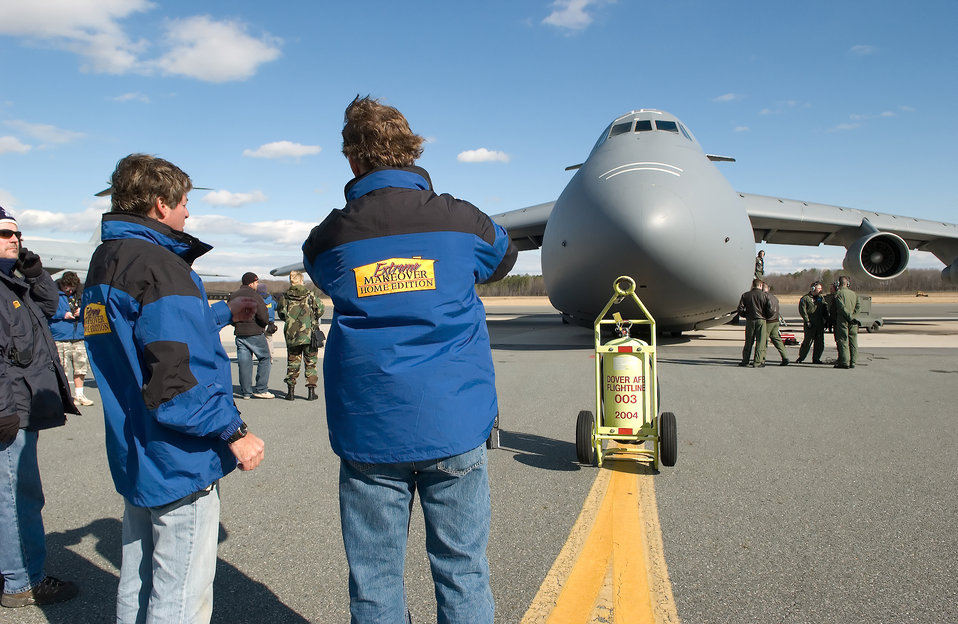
'Extreme Makeover' films at Dover